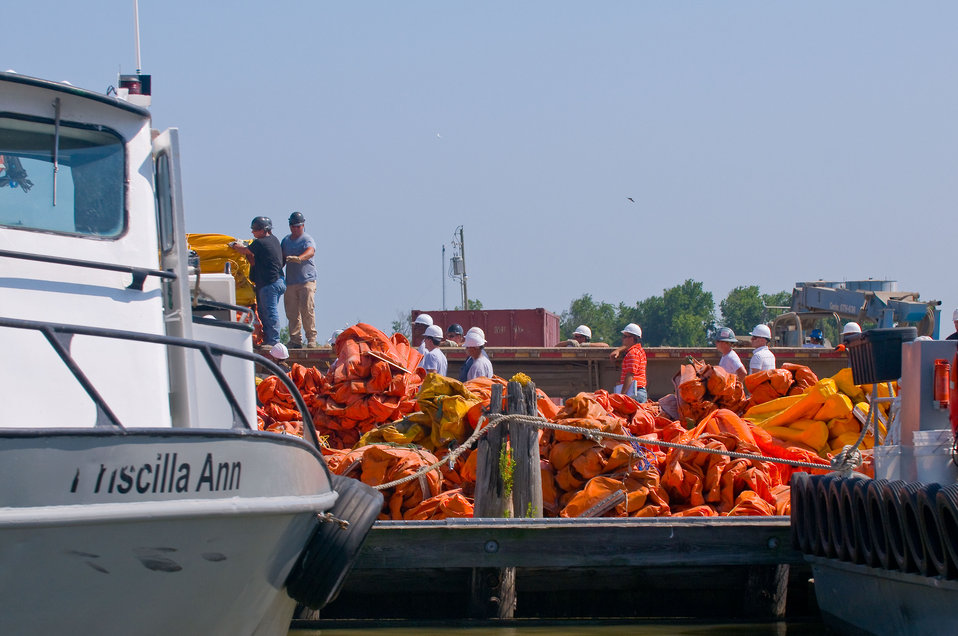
Loading new boom supply.

May 12, 2010.